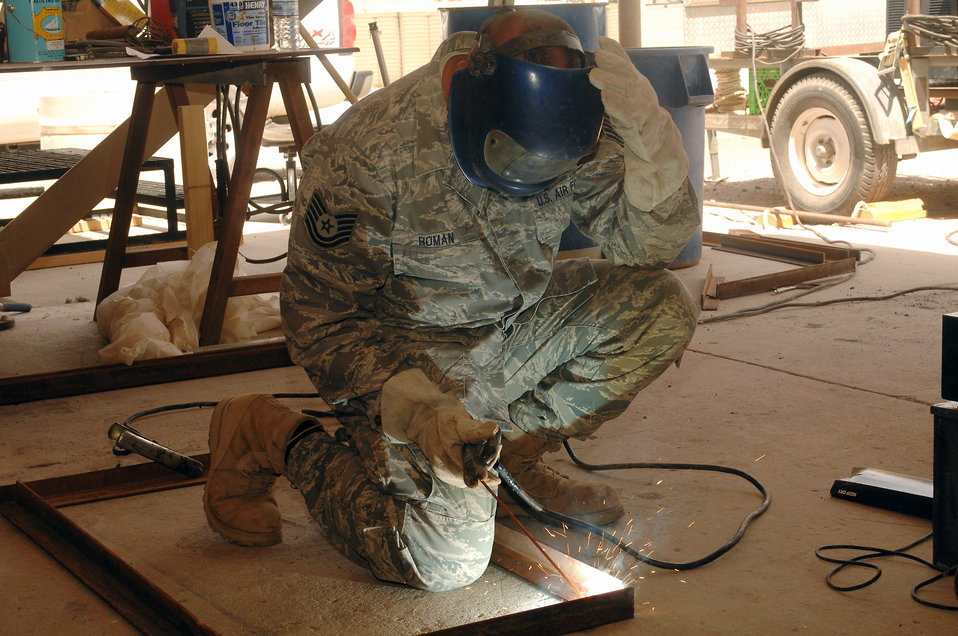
Working dog kennels receive massive renovation

Sparks fly as Tech. Sgt. Anthony Roman, deployed to the 386th Expeditionary Civil Engineer Squadron, uses an arc welder to join a frame together on July 11 at a base in Southwest Asia. The 386th ECES is completing a project to increase the square footage of the K-9 kennels for the 386th Expeditionary Security Forces Squadron. The metal frames will be used to build new ramps for the facilities. Sergeant Roman is deployed from the 156th Airlift Wing, Muniz Air National Guard Base, Puerto Rico.